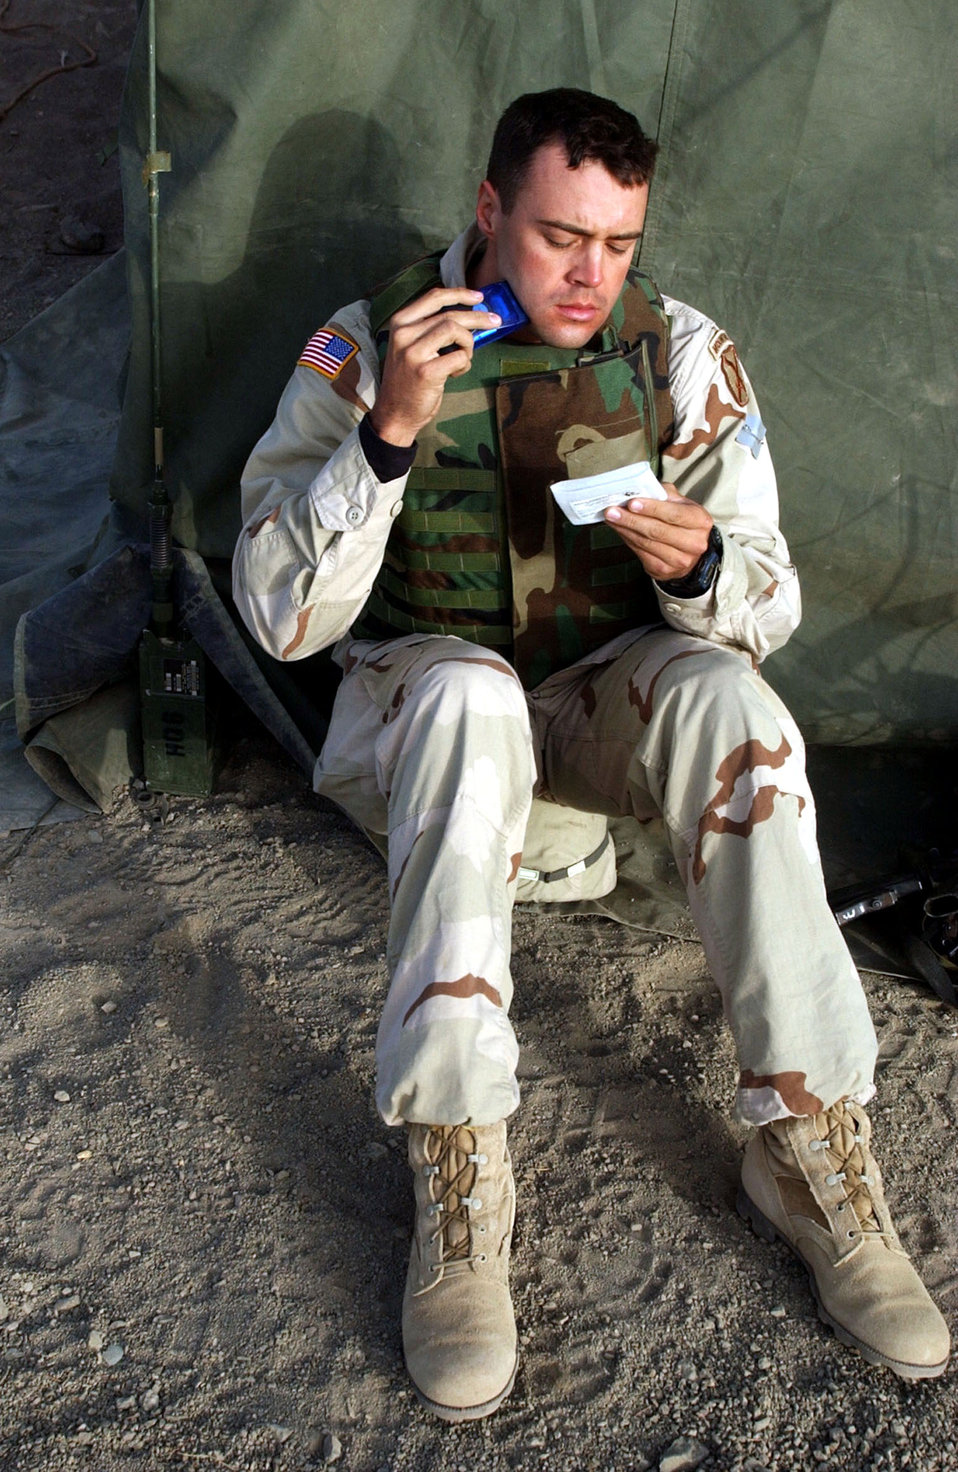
Quick shave

OPERATION ENDURING FREEDOM -- Capt. Danny Stout, an air liaison officer deployed with the Army's 2-505 Parachute Infantry Regiment of the 82nd Airborne Division, uses his signaling mirror for a quick shave the morning after air-assaulting into a hostile area in the mountains of Afghanistan. Stout, a B-52 Stratofortress pilot serving a two-year tour with the Army, uses the same mirror to signal coalition aircraft on close-air support missions.